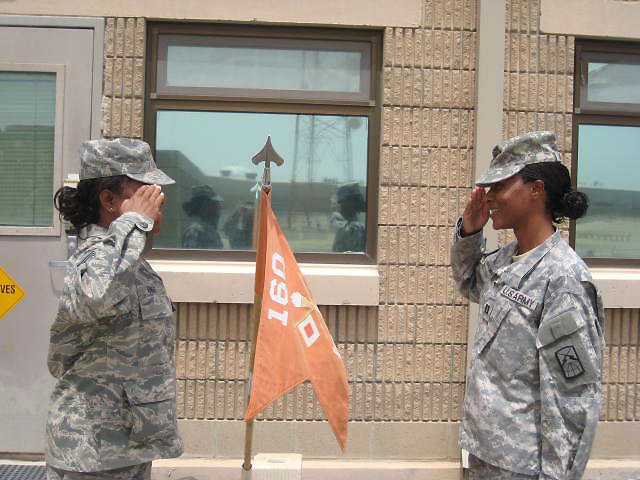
A tradition of honor; Service members share pride in service

Chief Master Sgt. Sadie Knight renders a salute to her daughter, Army Capt. Stacy Mitchell, before departing a Southwest Asia Army camp. Chief Knight and Captain Mitchell were assigned to different locations in the region, but were able to meet four times during their time in the area of operation while supporting the war on terror.